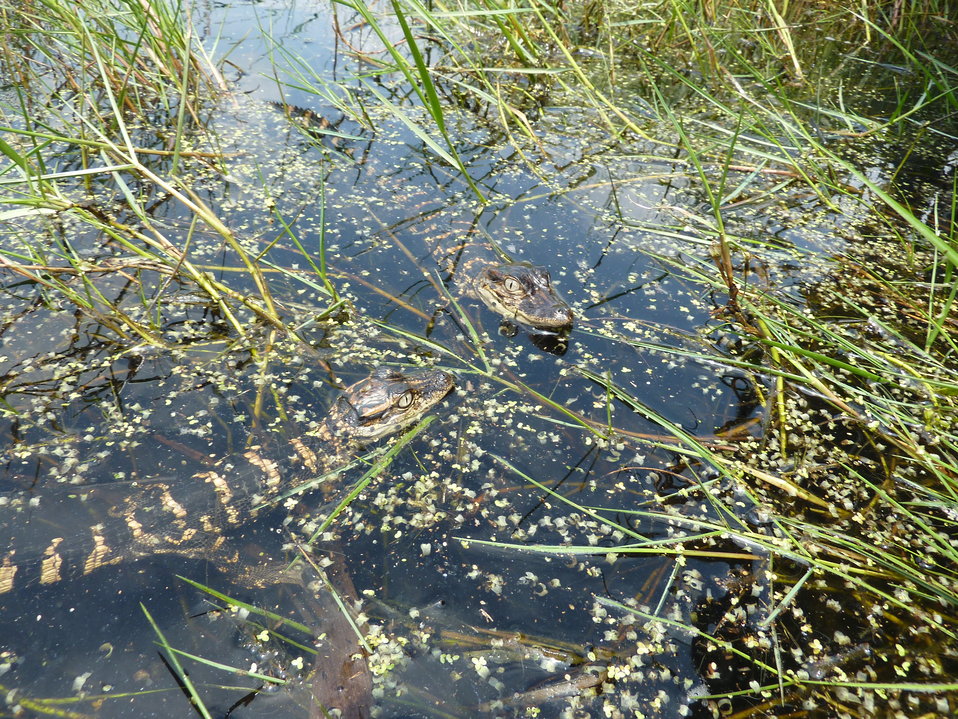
American alligator babies

Two recently released American alligators explore their new home in the Louisiana marshes.